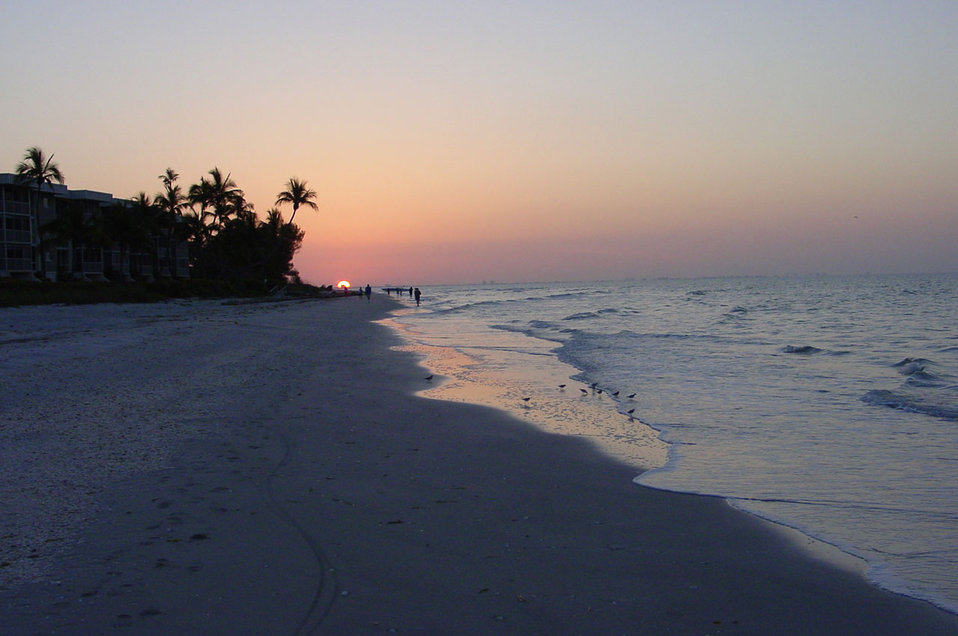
Sunrise

Sanibel island.